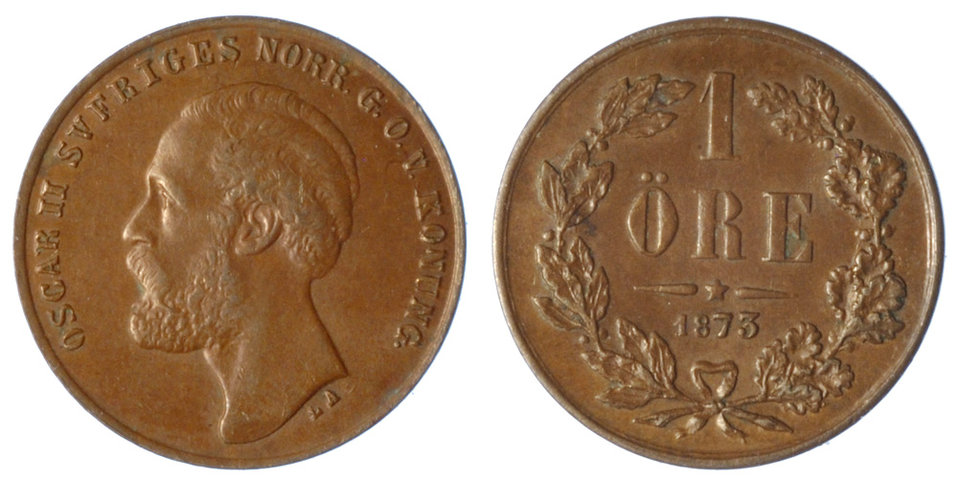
1 öre 1873